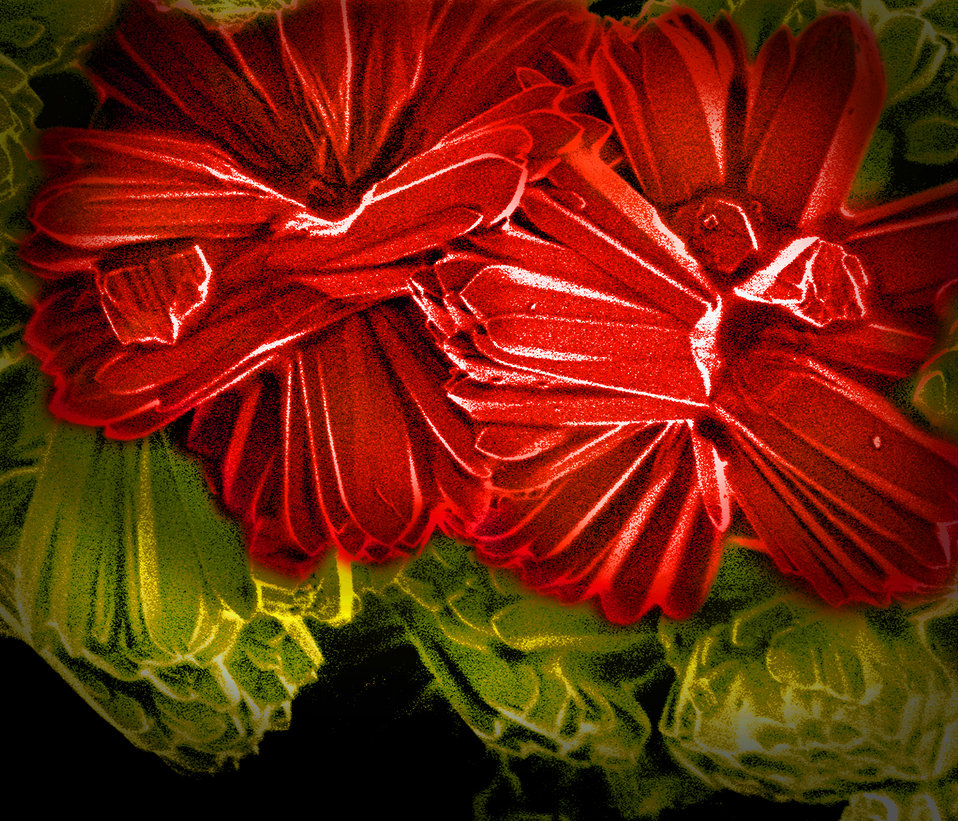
At PNNL removing carbon dioxide (CO2) from the gases emitted by coal-fired and other fossil-fueled power plants requires materials that can efficiently extract the CO2 while ignoring the other gaseous molecules.
The materials must be capable of working in hot, moist environments without losing efficiency. PNNL researchers modified the surface of a material called a metal-organic framework (MOF) to render it better able to extract CO2 under the working conditions it might encounter. The MOF shown above was imaged at 20,000 times magnification using a focused ion beam scanning electron microscope. The proposed surface modification may be applicable to thousands of different MOF materials to improve moisture stability and increase selectivity towards CO2 extraction. This work will help to make fossil energy use more sustainable, safer and cleaner.